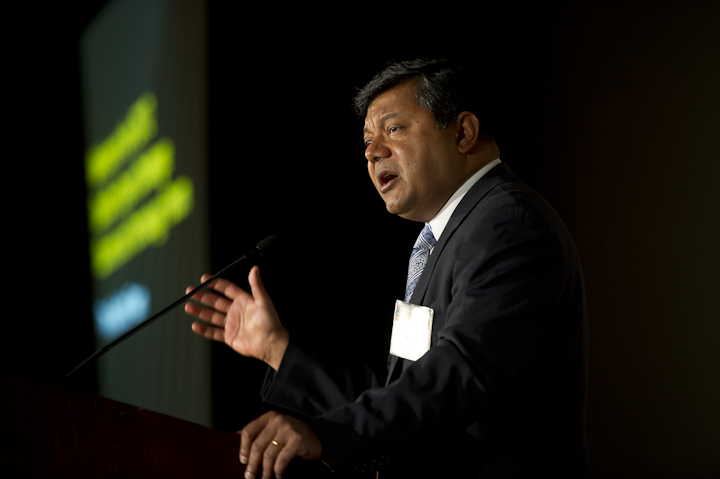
Arun Majumdar, Founding Director, ARPA-E

June 13, 2012 - Arun Majumdar, Founding Director, ARPA-E gives the welcoming remarks at the SunShot Grand Challenge Summit and Technology Forum in Denver, Colorado.